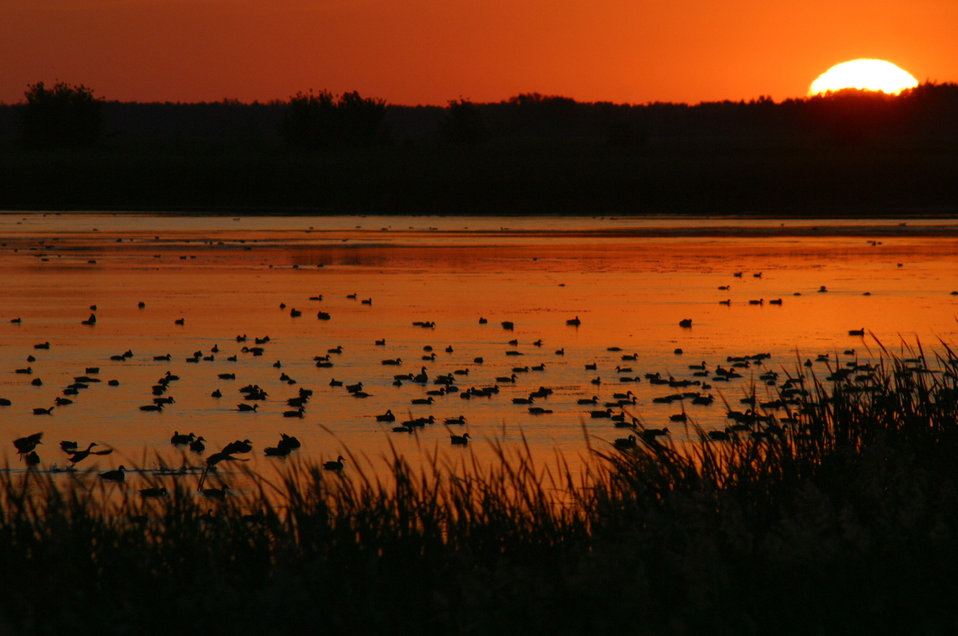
ducks at sunrise, Agassiz National Wildlife, MN

Photo: Rachael Carnes, USFWS
2011 Wilderness Fellow